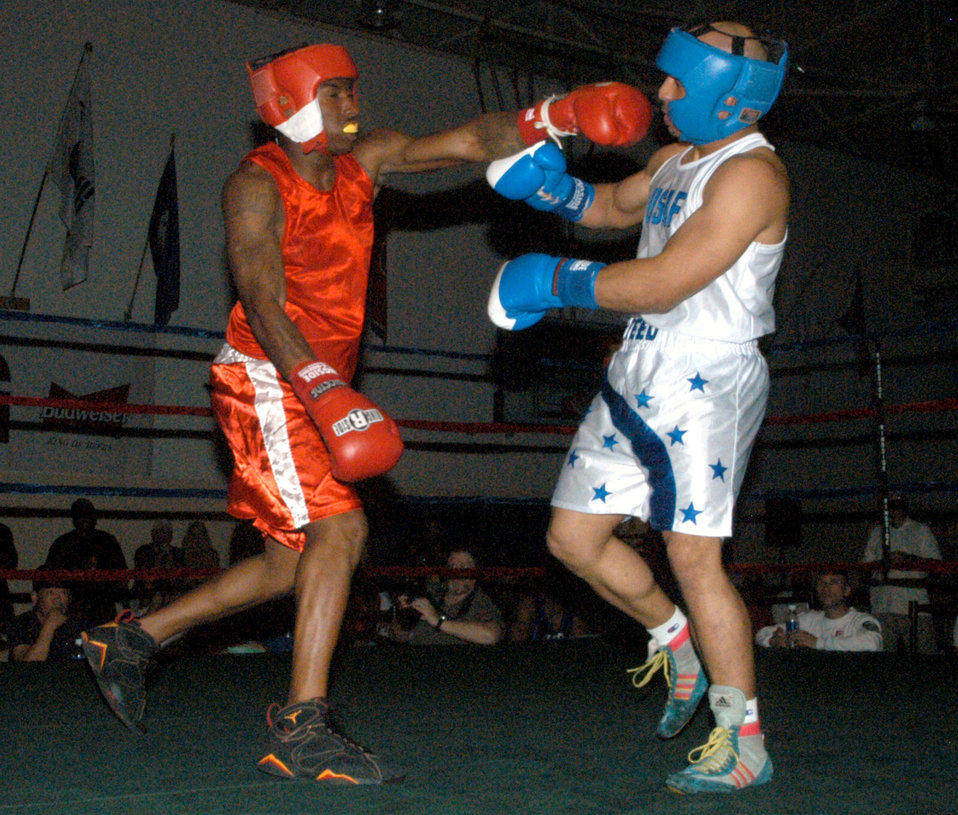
Airmen, Soldiers compete during boxing tourney

Avery Robinson (left), stationed at U.S. Army Garrison Humphreys, delivers a blow to Kunsan Air Base's Vincent Reed during the 2007 summer Smoker Boxing Tournament Aug. 11 at USAG Humphreys. Even though he tired himself out in the first round with lightning punches, Robinson still took the win by split decision.